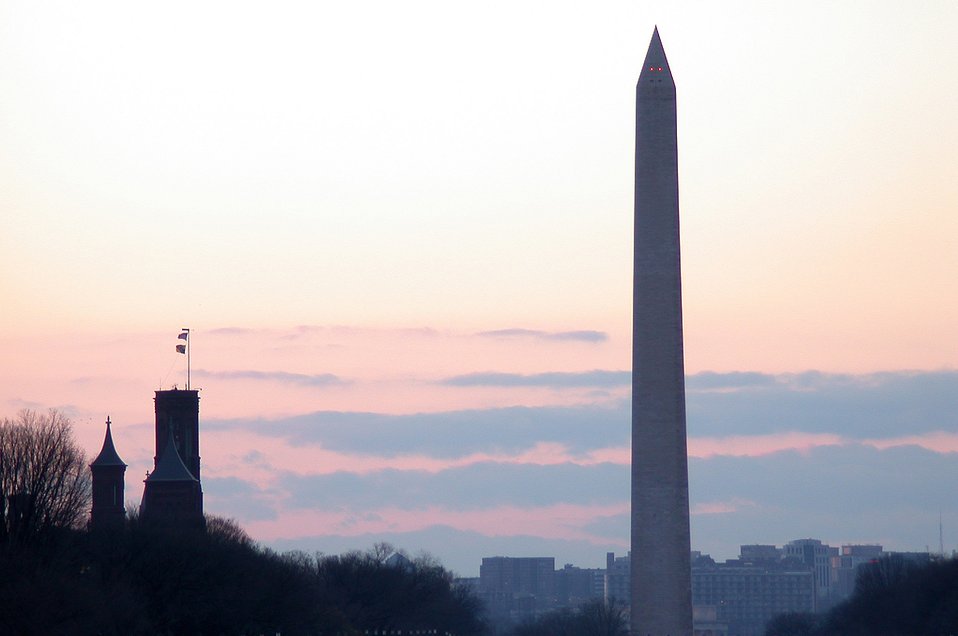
Washington Monument.